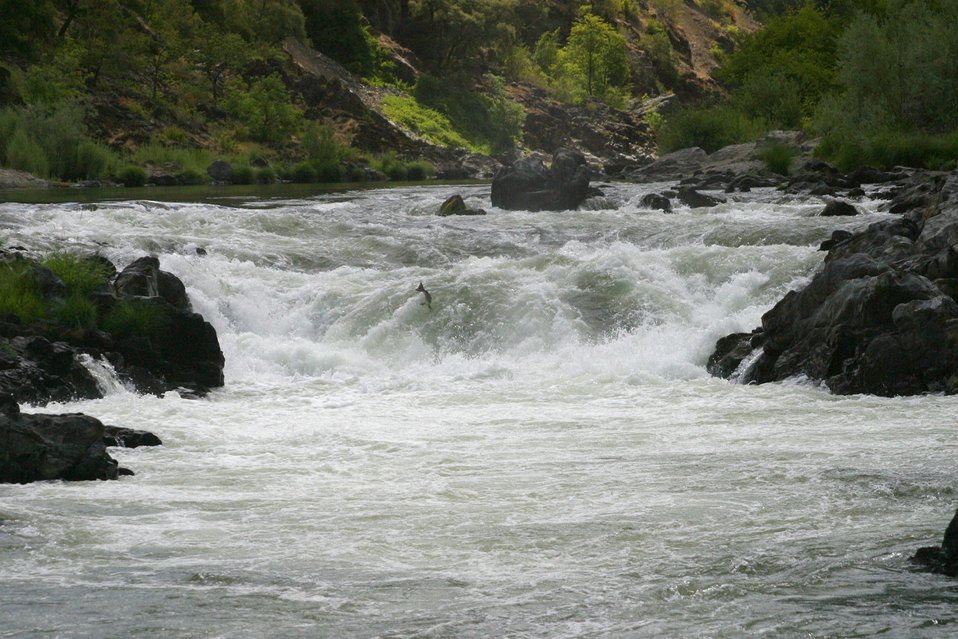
Salmon jumping up the main falls of Rainie Falls.